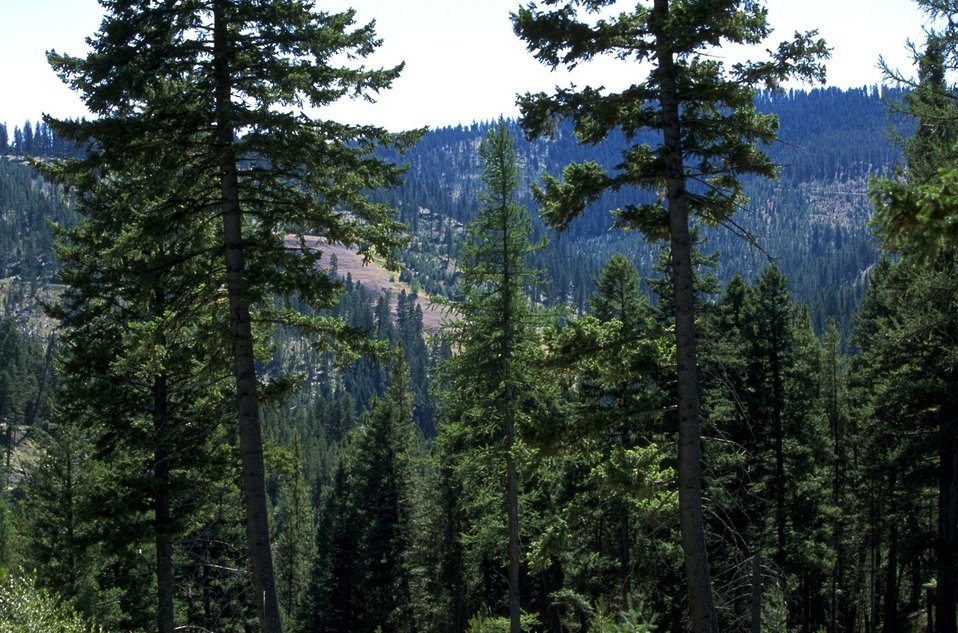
Garnet Back Country Byway--reclaimed barite mine